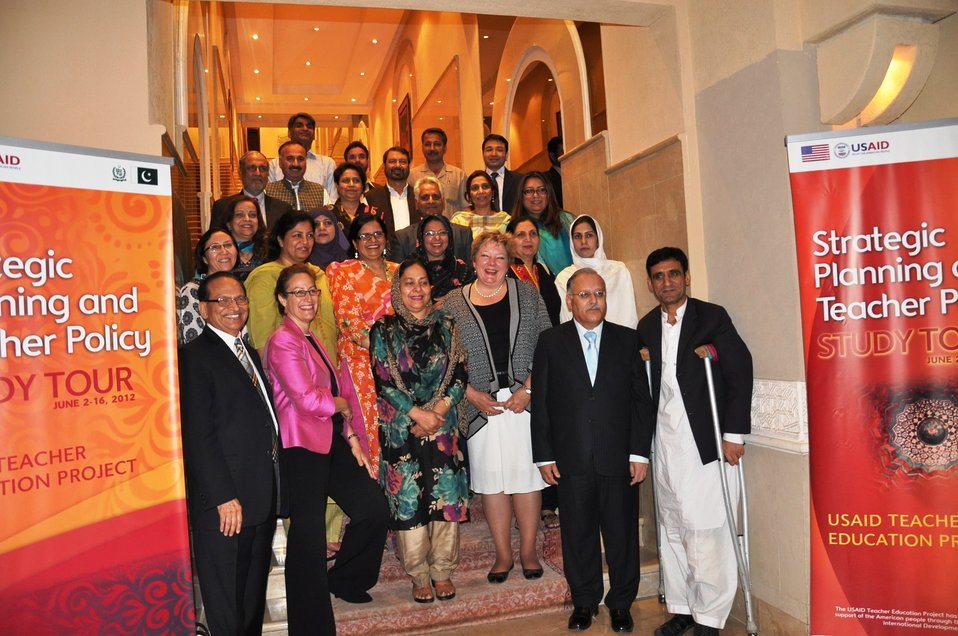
Study Tour: Strategic Planning and Teacher Policy

Islamabad May 31, 2012 -- USAID Deputy Mission Director, Karen Freeman with faculty members and senior government officials participating in the two-week study tour on Strategic Planning at Teachers College, Columbia University, New York.